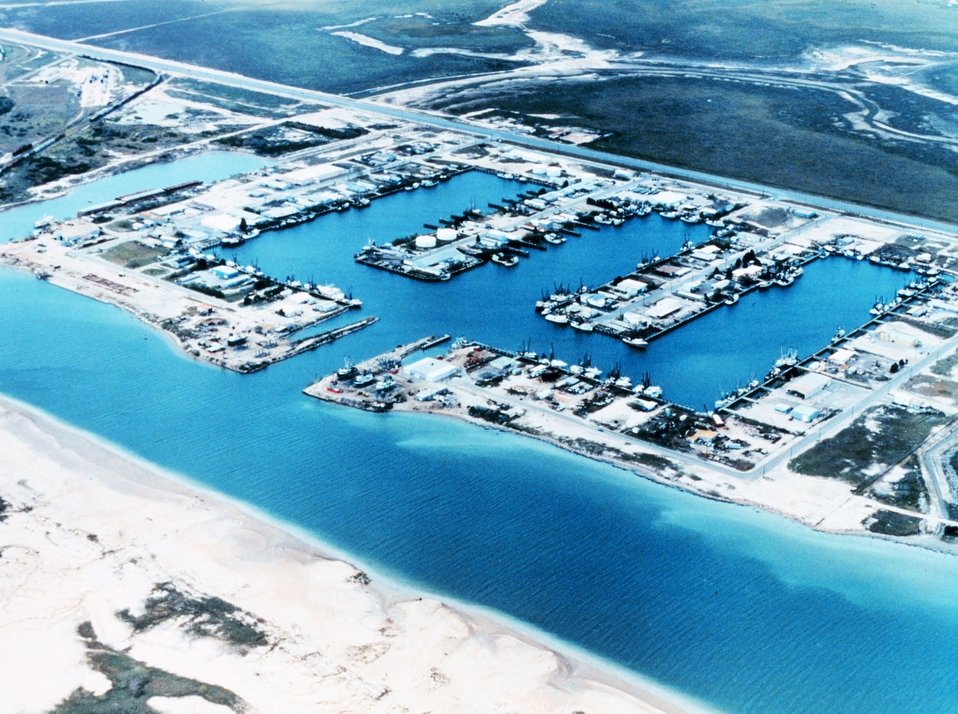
2559 North Latitude 9718 West Longitude.